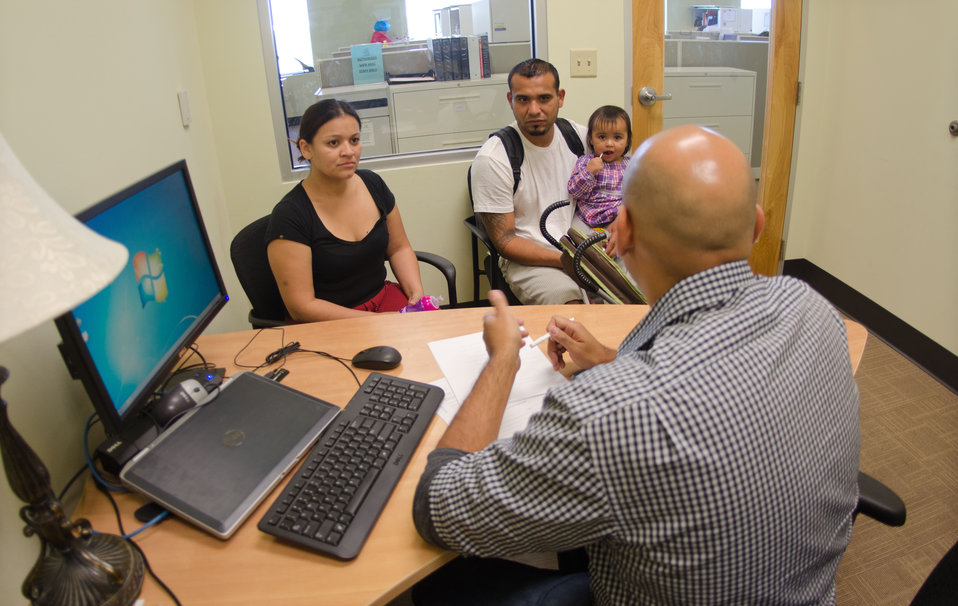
“You should never be too prideful to ask for assistance …” said Olivia Hernandez (second from left), on Monday, October 31, 2011, in the San Antonio Food Bank (SAFB) Outreach Office, when asked about what others should keep in mind when faced with a crisis such as the one Cesar Trevino (second from right), daughter Lana (right, 1 yr. old) and she did the prior evening, when a distant apartment unit caught fire, spreading smoke and flames throughout the building, eventually consuming their Texas apartment as well. Left with the clothes they are wearing they were referred to the San Antonio Food Bank where they sat down with Outreach Specialist Seth Villalobos (left) who listened and determined what their immediate needs were. Villalobos talked about the programs that could address their needs, and benefits that could help them rebuild their lives. During this initial visit, they applied for Children’s Medicaid and Women, Infants & Children (WIC) benefits, later they were briefed about the United States Department of Agriculture’s Supplemental Nutrition Assistance Program (SNAP) and the Federally funded, state administered Temporary Assistance for Needy Families Benefits (TANF) as well as other Federal and State programs. At the end of their meeting Hernandez said, “It was super-easy, very friendly staff.” And Trevino added, “great service.” Later that day, Villalobos made a personal trip to this family’s temporary home to deliver a box of groceries to make their first evening a little easier. In the box were provisions from the USDA and other contributors to SAFB.
San Antonio Food Bank is a non-profit organization that serves as a clearinghouse receiving and storing truckloads of donated food, produce, and other grocery. SAFB distribute these items to over 500 service agencies that help people in need.
“We couldn’t do what we do without our partnership with USDA’” said President and CEO Eric Cooper. SAFB serves 16 counties in Southwest Texas and states, “Nearly one out of every four children and one out of every five adults in Southwest Texas lives in poverty and has difficulty meeting basic nutritional needs.” According to SAFB, sixty-five percent of the people requesting emergency food have children. USDA photo by Lance Cheung.
www.fns.usda.gov/fns/
www.fns.usda.gov/snap/ www.fns.usda.gov/fdd/programs/tefap/